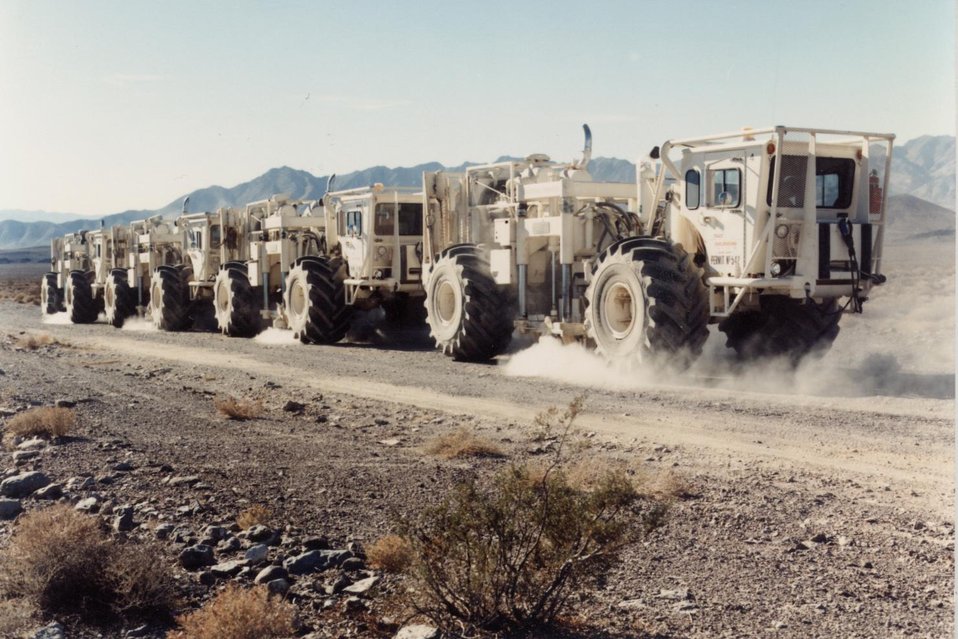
SPECIALIZED TRUCKS VIBRATE THE GROUND TO SIMULATE NATURAL SEISMIC ACTIVITY AT YUCCA MOUNTAIN.

YUCCA MOUNTAIN, SITUATED ON THE SOUTHWEST BOUNDARY OF THE NEVADA TEST SITE, IS BEING EVALUATED FOR SUITABILITY AS THE NATION'S FIRST REPOSITORY FOR HIGH LEVEL NUCLEAR WASTE. STUDIES INCLUDE WEATHER PATTERNS OF THE AREA, SURFACE TESTING OF ROCK, SOIL SAMPLES AND WATER MOVEMENT, AS WELL AS SUBSURFACE ROCK TESTING AT DEEP LEVELS AND LABORATORY ANALYSIS OF SAMPLES.